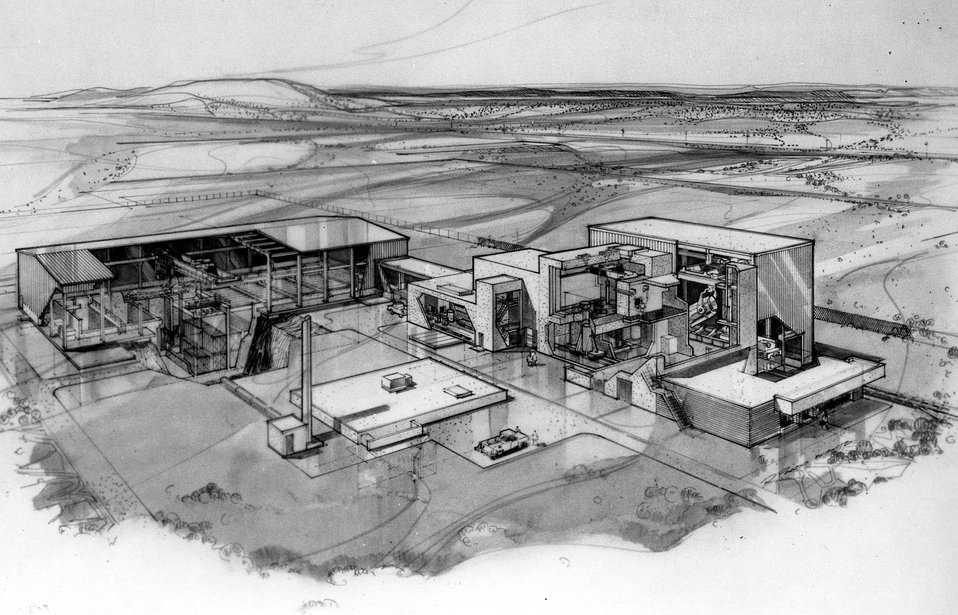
Artist's concept of first module and receiving facilities of a Retrievable Surface Storage Facility the Atomic Energy Commission might build to receive solidified commercial high-level radioactive waste. c. 1973